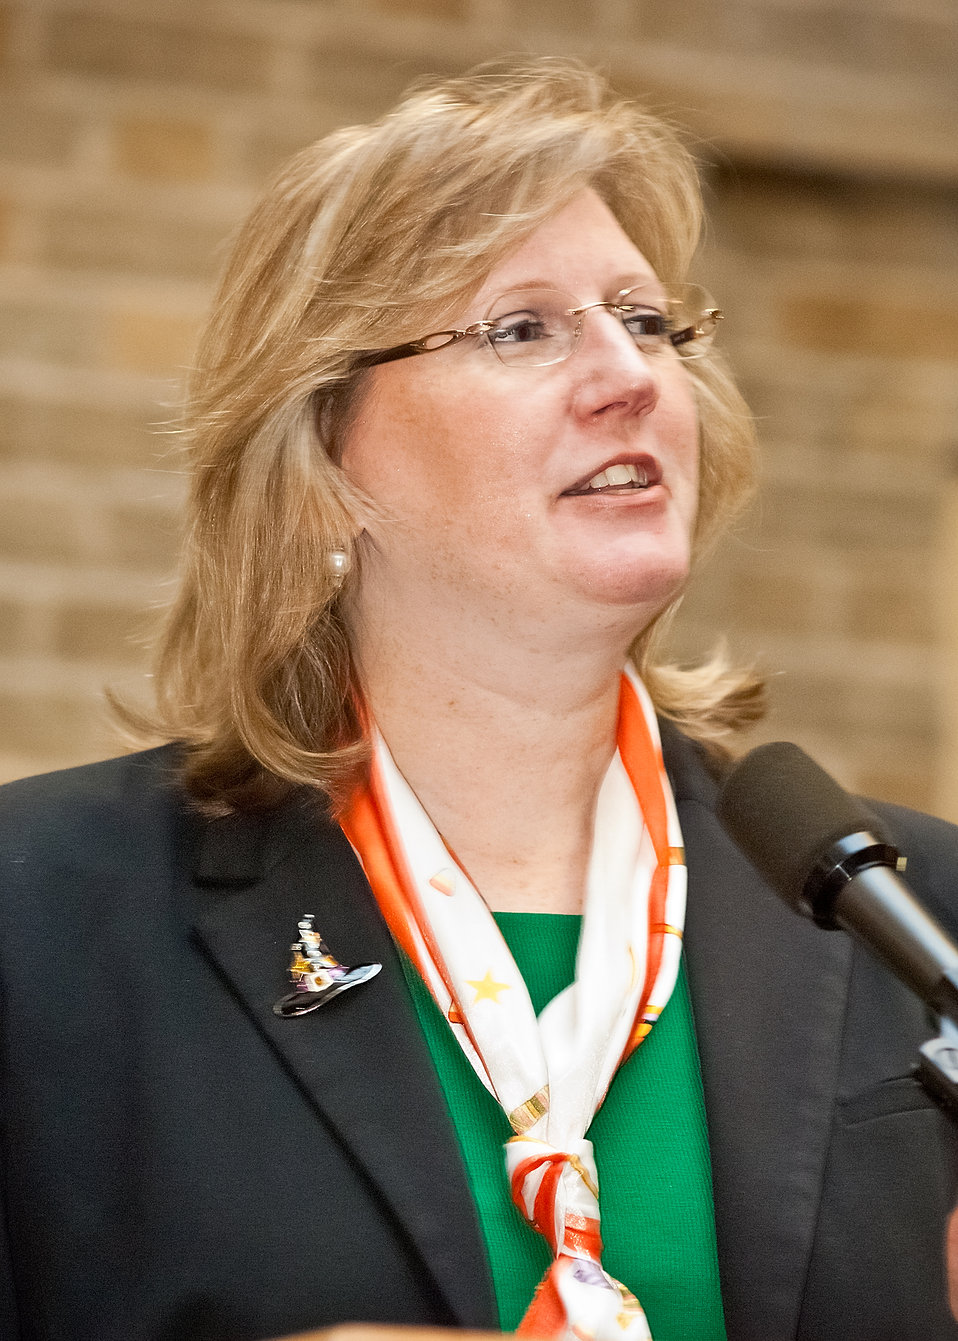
Disability Program Manager, Office of Human Resources Management Alison Levy welcomes employees and exhibitors to the U. S. Department of Agriculture (USDA) Section 508 and Disability Awareness Program in Washington, DC, on Monday, Oct. 31, 2011. Sponsored by the Office of the Chief Information Officer, the theme of the event was, “Turning the Key to Unlock and Eliminate Barriers by Providing Accessibility to All.” Section 508 applies to the development, procurement, maintenance or use of electronic and information technology allowing accessibility and awareness to promote inclusiveness to employees and the public with disabilities to information technology managed by the Federal government. Section 508 is part of the USDA’s Cultural Transformation Initiative to hire more employees with disabilities.